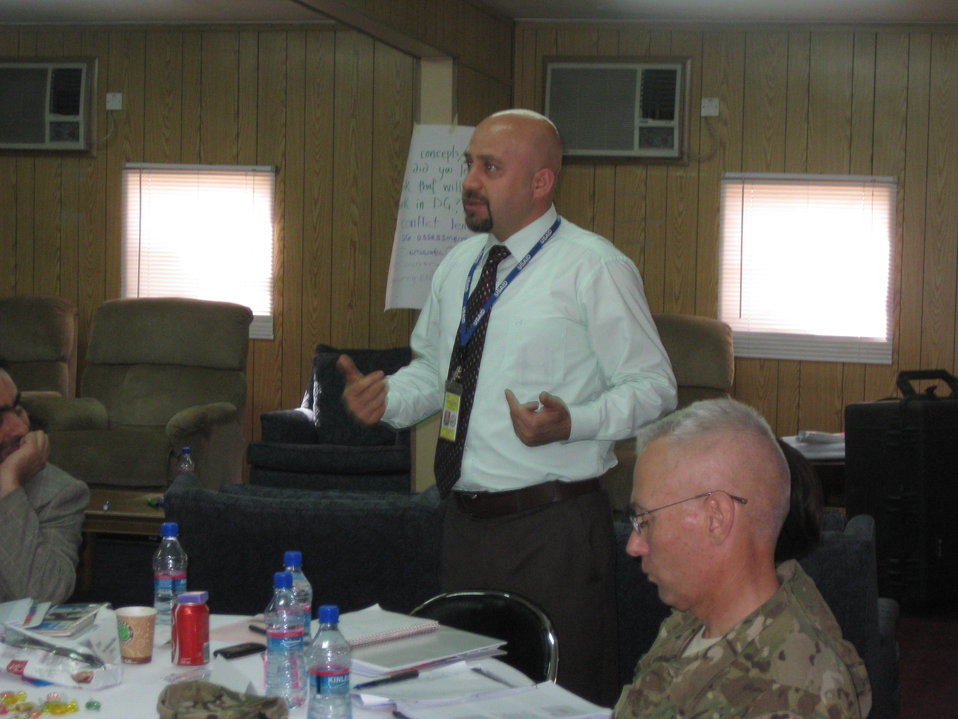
Afghan Youth Voices 046